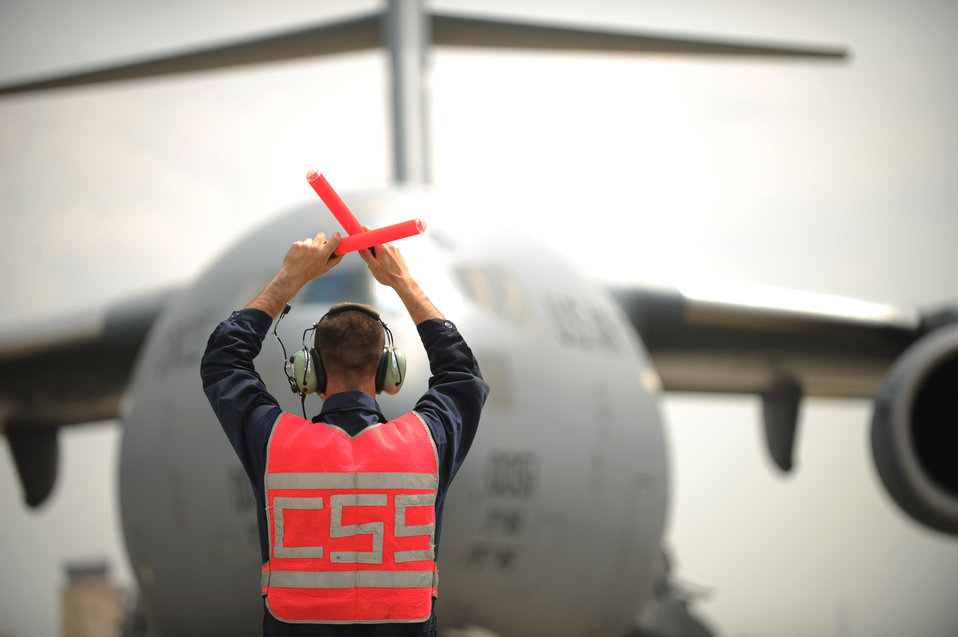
Put 'er there...

Staff Sgt. Ryan Hart marshals a C-17 Globemaster III to its parking spot at Yokota Air Base, Japan. Sergeant Hart is a crew chief with the 730th Air Mobility Squadron there.